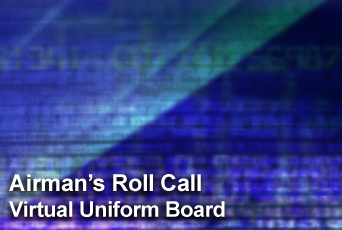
Airman's Roll Call highlights new Virtual Uniform Board

This week's Airman's Roll Call focuses on the new Virtual Uniform Board. The program allows individuals to submit uniform change requests through the Air Force?s Innovative Development through Employee Awareness program, known as the IDEA program.